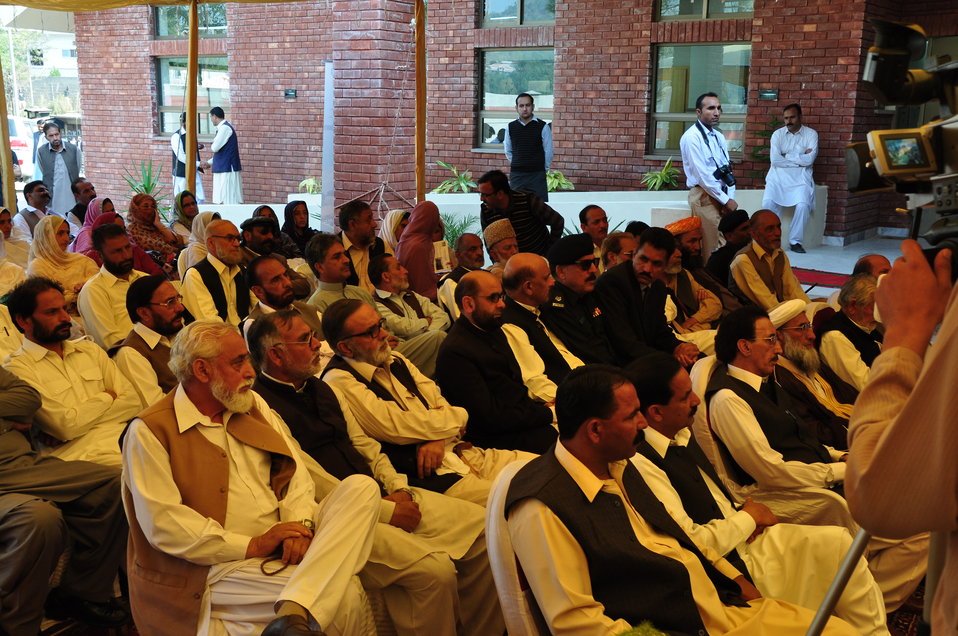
Dhirkot Reconstructed Hospital Inauguration Pakistan Reconstruction Program 17